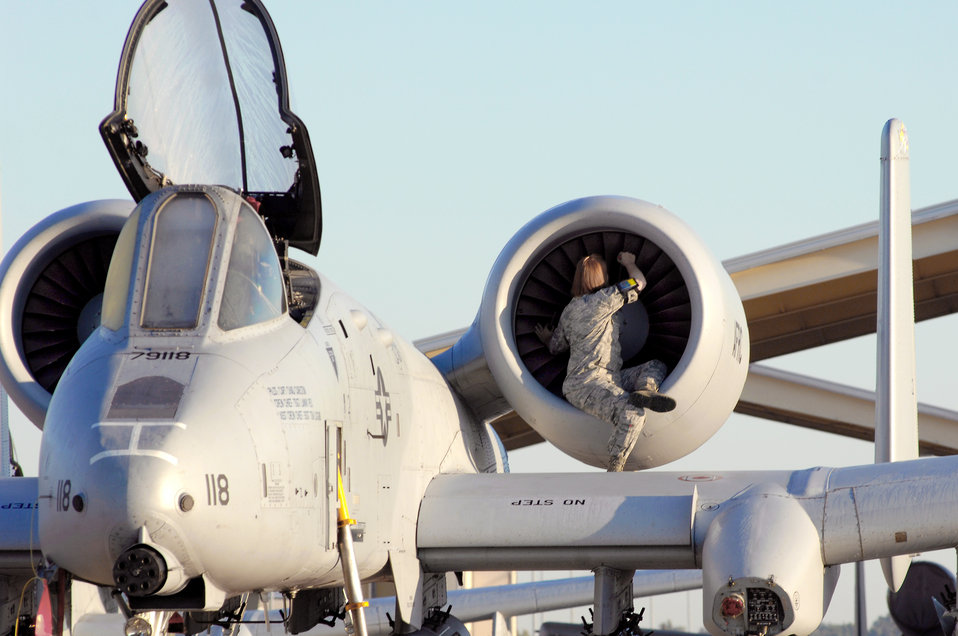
Thorough inspection

Airman Jill Hallandsworth performs a preflight engine check on an A-10 Thunderbolt II during an overall aircraft inspection Sept. 25, 2009, at Whiteman Air Force Base, Mo. Airman Hallandsworth is a 442nd Fighter Wing crew chief.